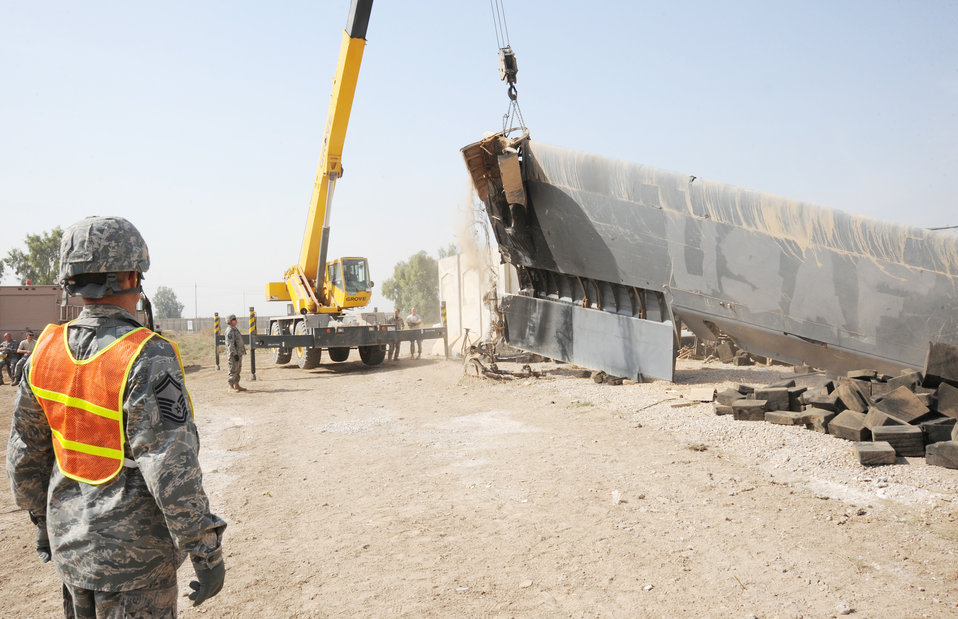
One Airman?s trash is other Airman?s training aid

Senior Master Sgt. James Miller watches an Iraqi crane operator remove the left wing from a wrecked C-130 Hercules Oct. 27, 2009, at Sather Air Base, Iraq. The aircraft is believed to have been destroyed years ago after it crashed short of a runway outside the wire, without casualties. Several American and Iraqi airmen are working together to salvage parts for use as hands-on training aids for Iraqi aircraft maintainers at New Al Muthana Air Base. Sergeant Miller is the senior enlisted adviser for aircraft maintenance advisors assigned to the 321st Air Expeditionary Advisory Group and is deployed from Barksdale Air Force Base, La. He is a native of Warren, Ill.